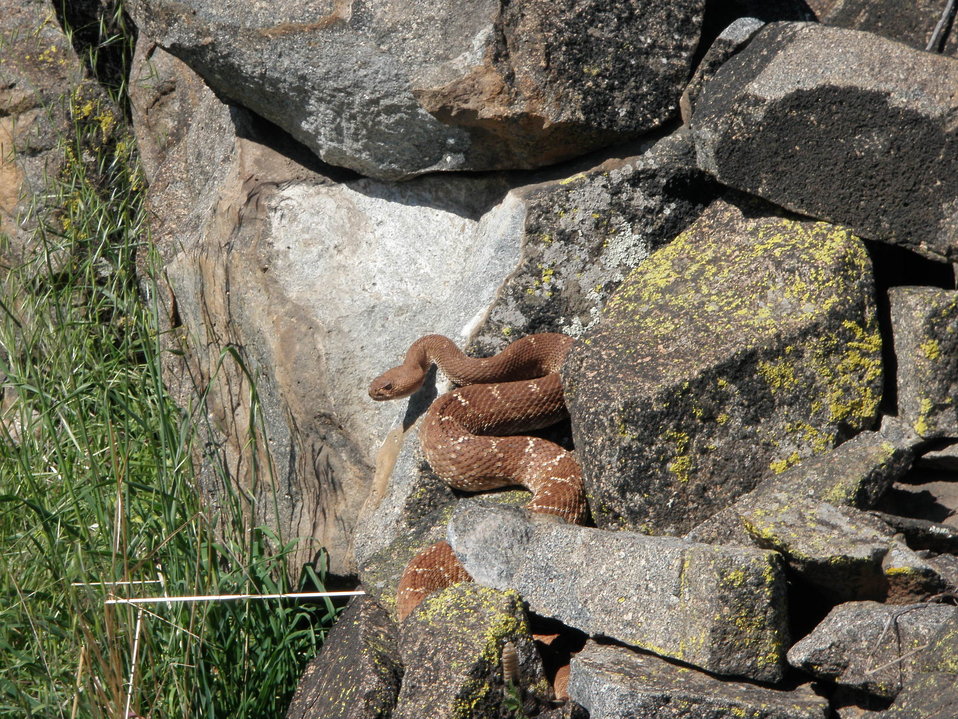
Red diamond back rattlesnake